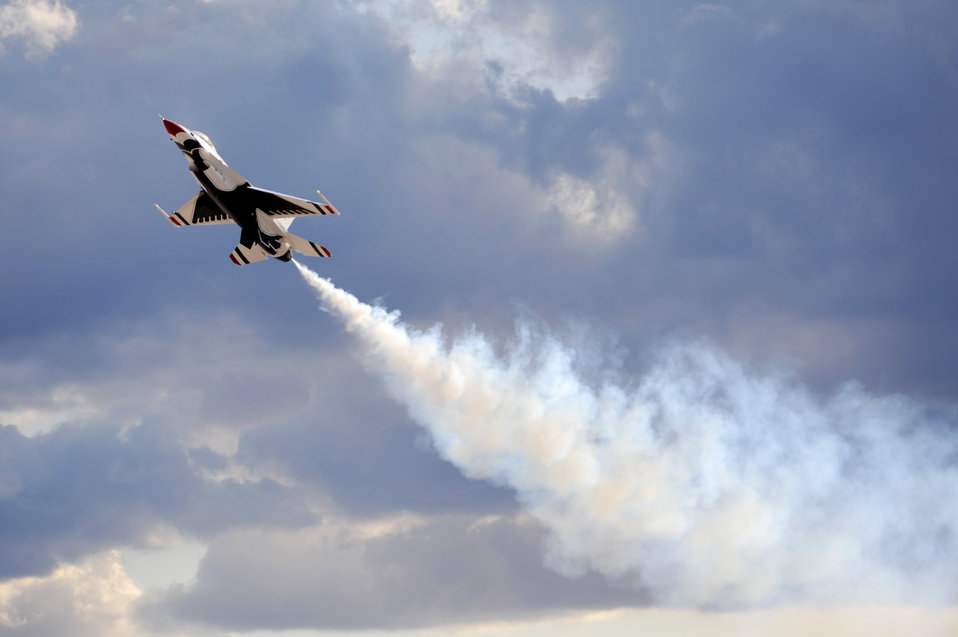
Thunderbirds close air show season

A U.S. Air Force Air Demonstration Team